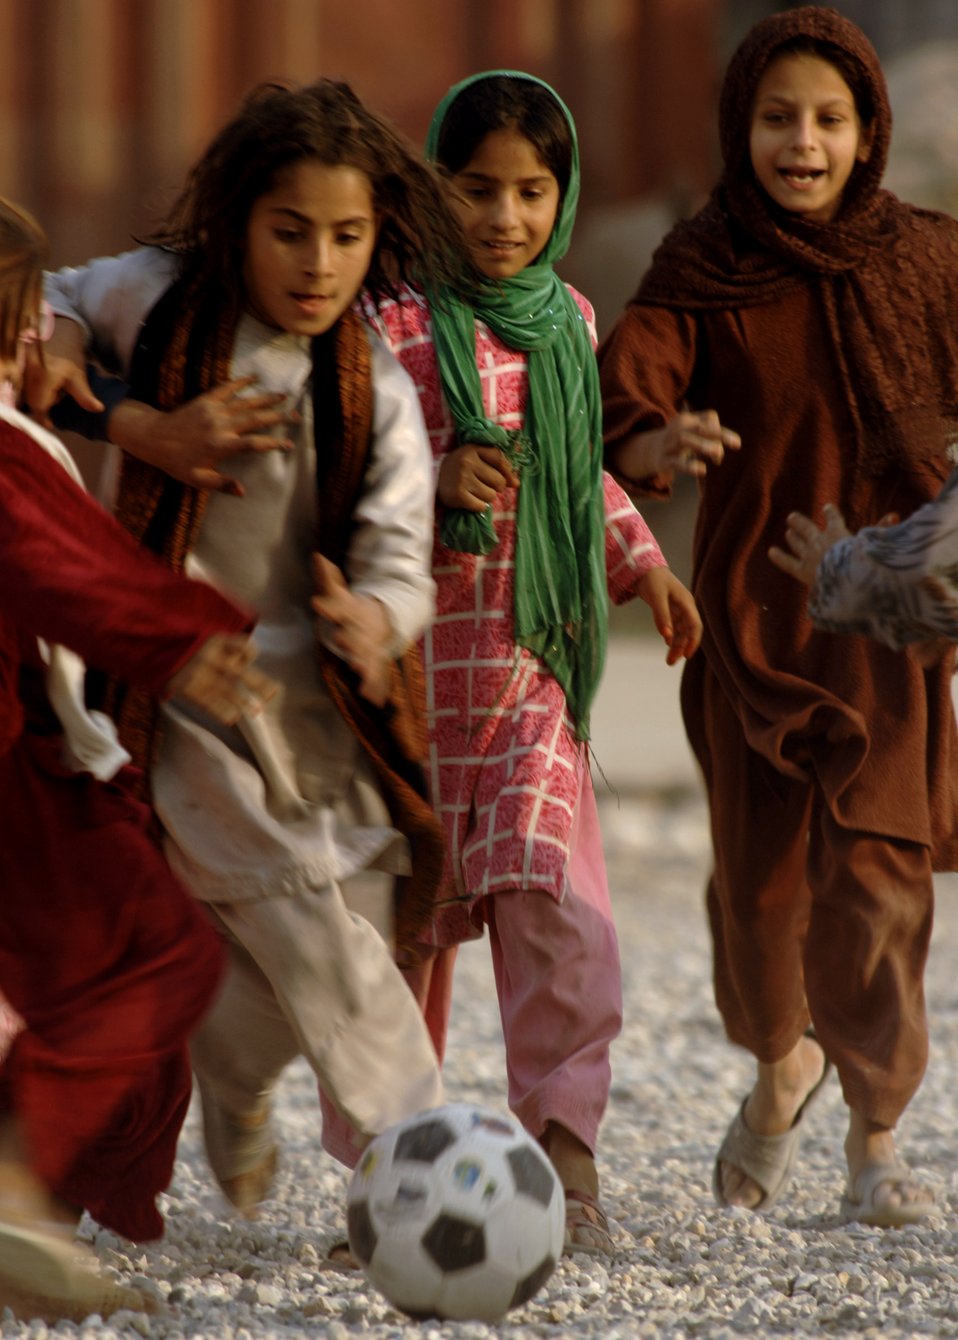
Having a ball

Afghan girls chase after a soccer ball during a game between children from the local community American servicemembers from the Nangarhar Provincial Reconstruction Team Nov. 9 at a forward operating base in Jalalabad, Afghanistan. The Nangarhar PRT is a joint team of Airmen, Soldiers and representatives from the U.S. Department of State, U.S. Agency for International Development and the U.S. Department of Agriculture. The team is responsible for helping the Islamic Republic of Afghanistan government improve security, governance and promote reconstruction in the Nangarhar Province. PRT members assess community needs and then builds schools, government centers, roads, medical capability and basic infrastructure throughout Nangarhar. Unit members also mentor Afghan government officials and security forces to provide the Afghan people with the state representation and security they need.